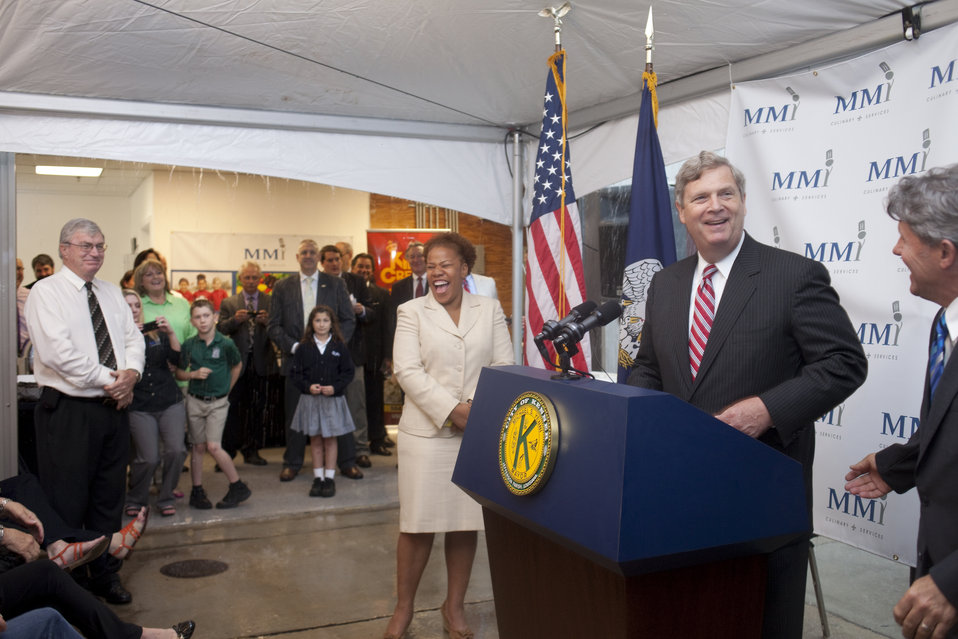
Agriculture Secretary Tom Vilsack speaks at the MMi Culinary Services in Kenner, LA on Wednesday, May 1, 2013. Secretary Vilsack stated that the U.S. Department of Agriculture (USDA) has made significant progress in improving the foods served to 32 million children each day through the National School Lunch Program. After the changes implemented by the Healthy, Hunger-free Kids Act of 2010, foods served in the lunch line include more fruits and vegetables, with less sugar, fat and sodium.